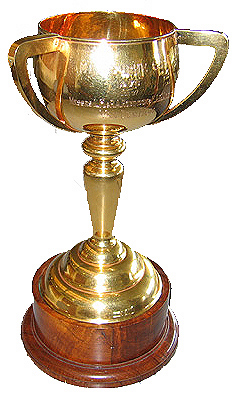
76MelbCup